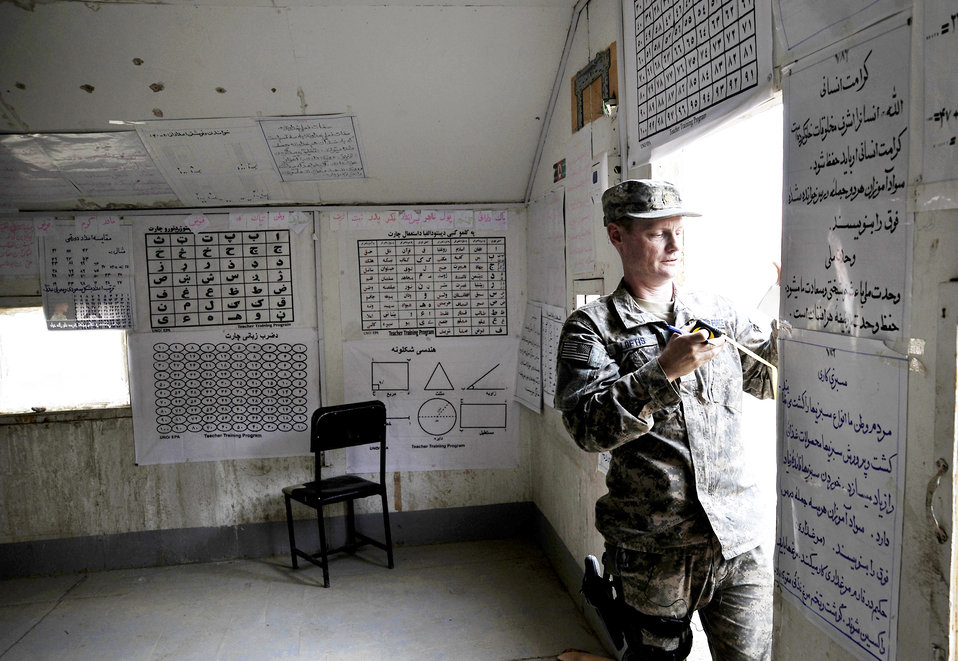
Reconstruction team delivers school supplies to Afghan soldiers

Maj. J.D. Loftis measures the entry way to an Afghan classroom Oct. 27, 2009, in Qalat, Afghanistan. One of the projects being supported by the American servicemembers is installing doors on classrooms across the province. Major Loftis is an information operations officer from the Zabul Provincial Reconstruction Team.